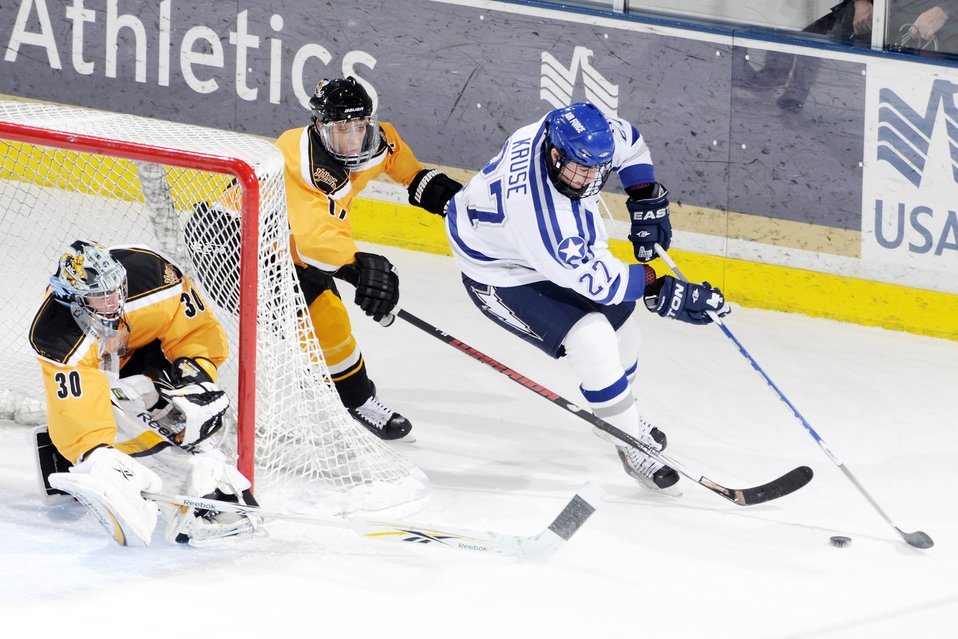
Falcons sweep hockey series

U.S. Air Force Academy freshman forward John Kruse moves the puck around the goal during the first period of the Falcon's game against American International College at the Cadet Ice Arena Dec. 5, 2009. Air Force defeated AIC 6-2, sweeping the series with a 5-3 win Dec. 4.